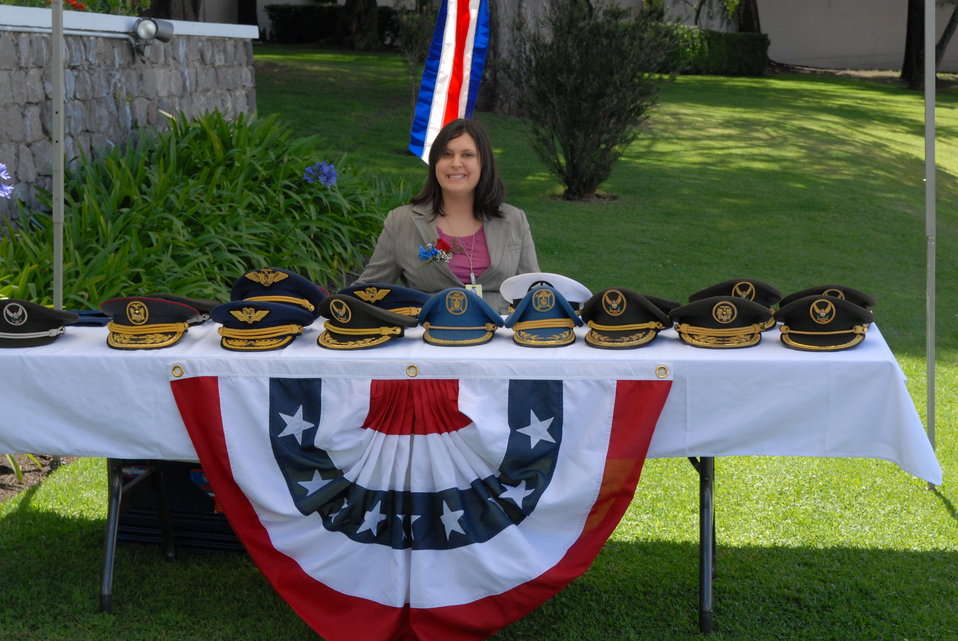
July 4th Celebration at U.S. Embassy in Ecuador

U.S. Embassy Quito staff member watches the hat table at the U.S. Independence Day celebration in Quito, Ecuador, on July 2, 2010.